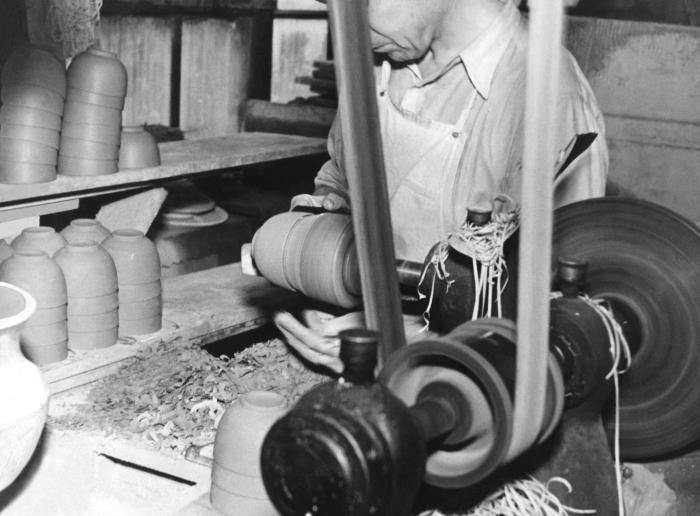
Provided by the Center for Disease Control's (CDC), National Institute for Occupational Safety and Health (NIOSH), this historic image depicted a male industrial worker who was inside a West Virginia ceramics factory, seen here as he was trimming what looked to be greenware dishes, using a motorized rotating lathe. Greenware is newly formed clay pieces that have not been fired to what is termed a 'bisque' state. Working within a clay-processing environment, workers should have taken precautions against the possibility of inhaling airborne particulates, which would lead to the chronic pulmonary disease known as pneumoconiosis, or silicosis, or more commonly known as 'grinders' disease', characterized by the formation of nodular fibrotic changes in the lungs. Note that this man was not wearing a filtered breathing mask, thereby, increasing his chances of contracting silicosis. The image was published in the 'Public Health Bulletin', No. 244, 1939.